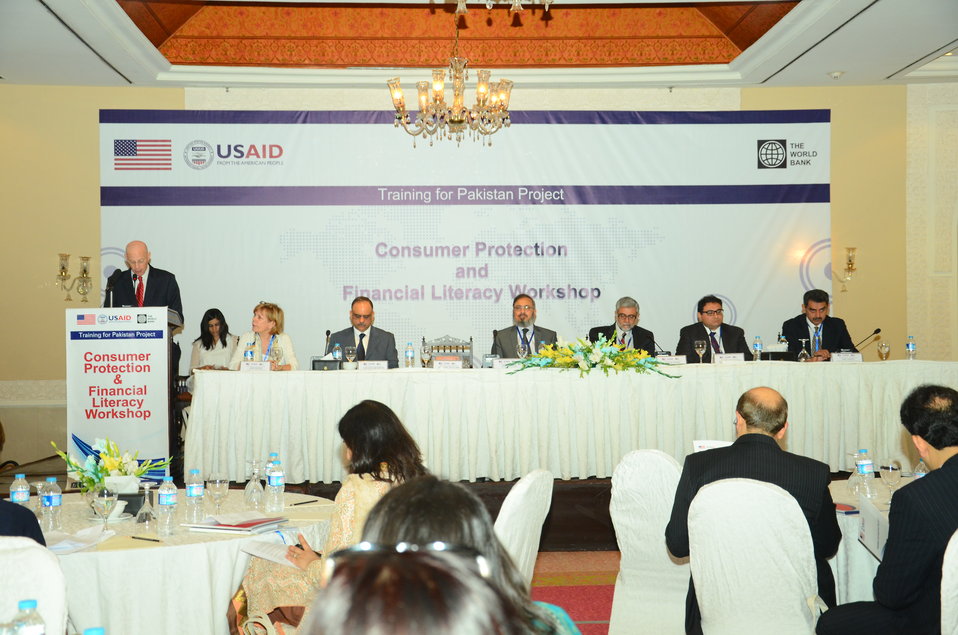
USAID supported Consumer Protection and Financial Literacy (CPFL) study to build public confidence in financial institutions; encourage savings and long-term investments.

USAID supported study to build public confidence in financial institutions; encourage savings and long-term investments